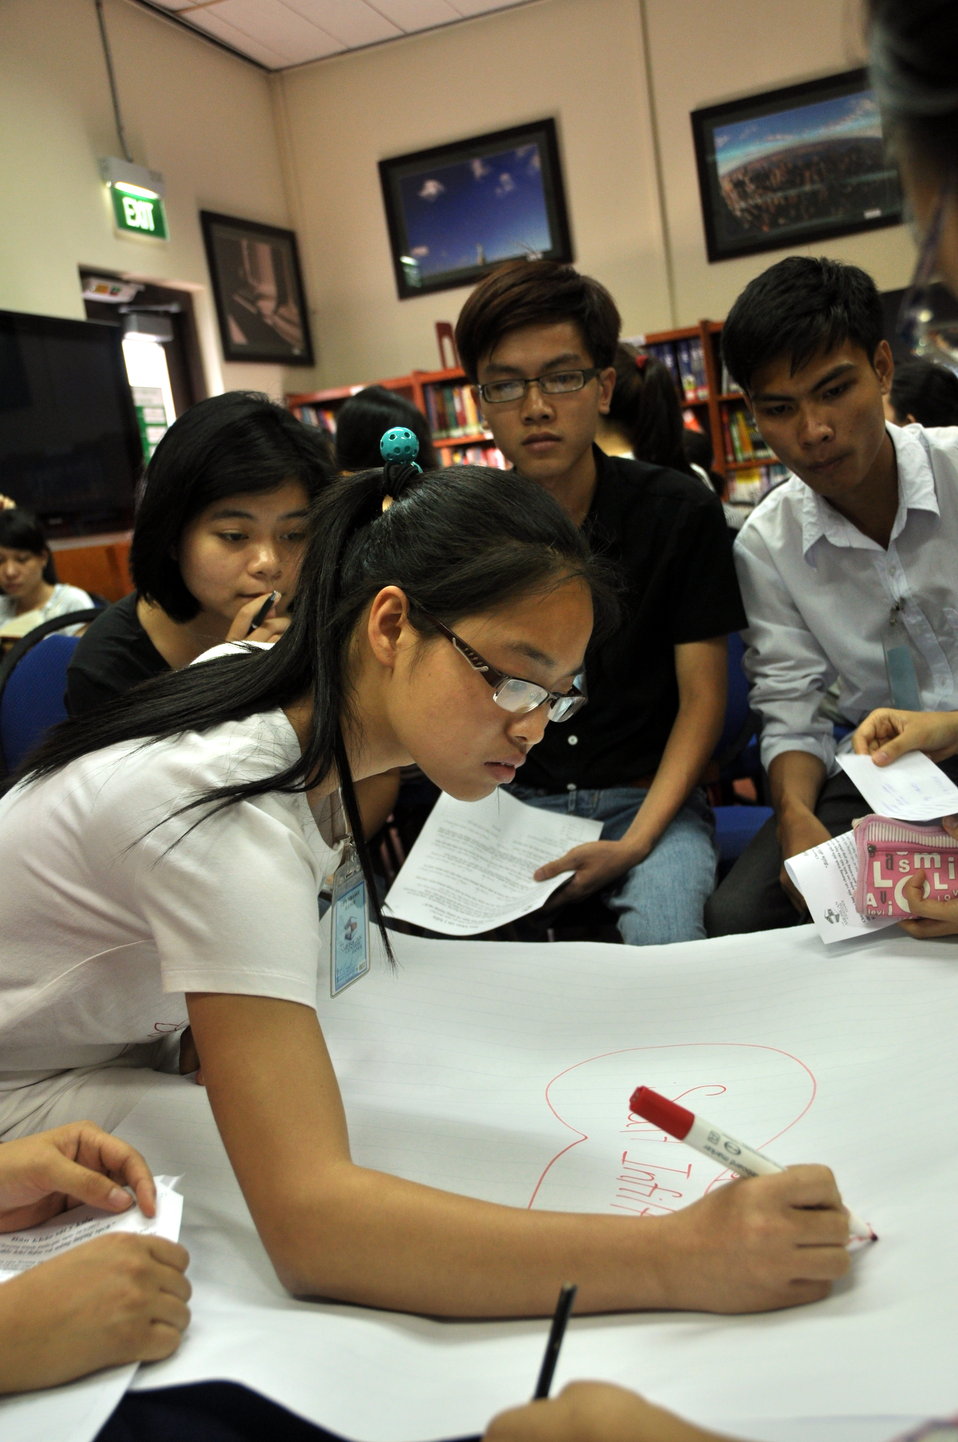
Climate Change Talk at the American Center

Hanoi, May 28, 2013.